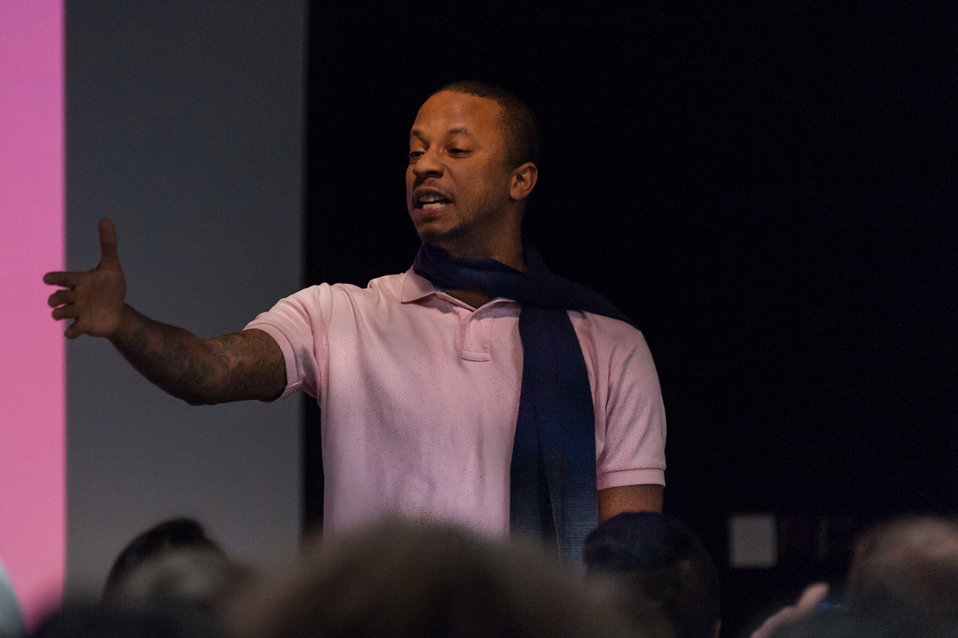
Mentor NDFW Event 2014

Mentor Foundation USA, in partnership with the National Institute on Drug Abuse (NIDA) and other key partners hosted a Youth Drug Facts Rally at the House of Sweden on Thursday, 30th January 2014. Approximately 200 students from five local high schools attended and had the opportunity to interact with top U.S. scientific experts, and inspiring guest speakers to “shatter the myths” about drugs and substance abuse, while pledging to stay drug-free.